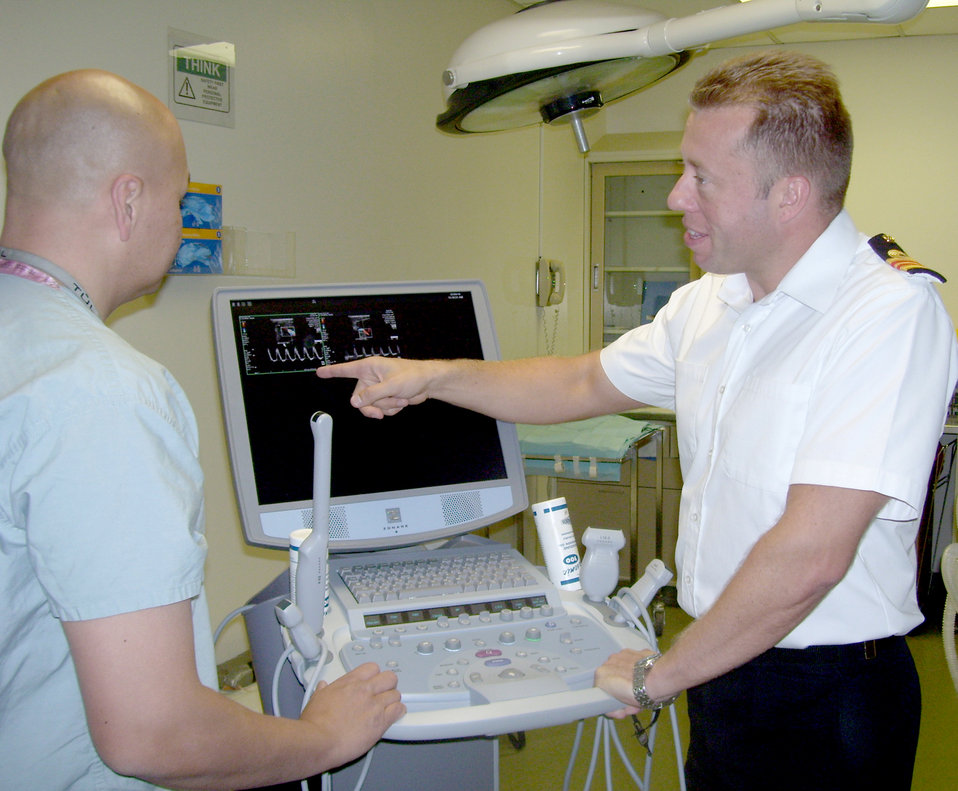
Trauma research team works to improve battlefield injury outcomes

Royal Navy Lt. Commander Adam Stannard (right) discusses blood flow on an ultrasound machine with Mike Goedecke, biological lab assistant, in the Clinical Research building May 6, 2010, at Lackland Air Force Base, Texas. Commander Stannard, a fellow in the Academic Department of Military Surgery and Trauma at the Royal Centre for Defence Medicine in Birmingham, England, has joined a 59th Medical Wing research team for one year to investigate vascular surgery techniques.